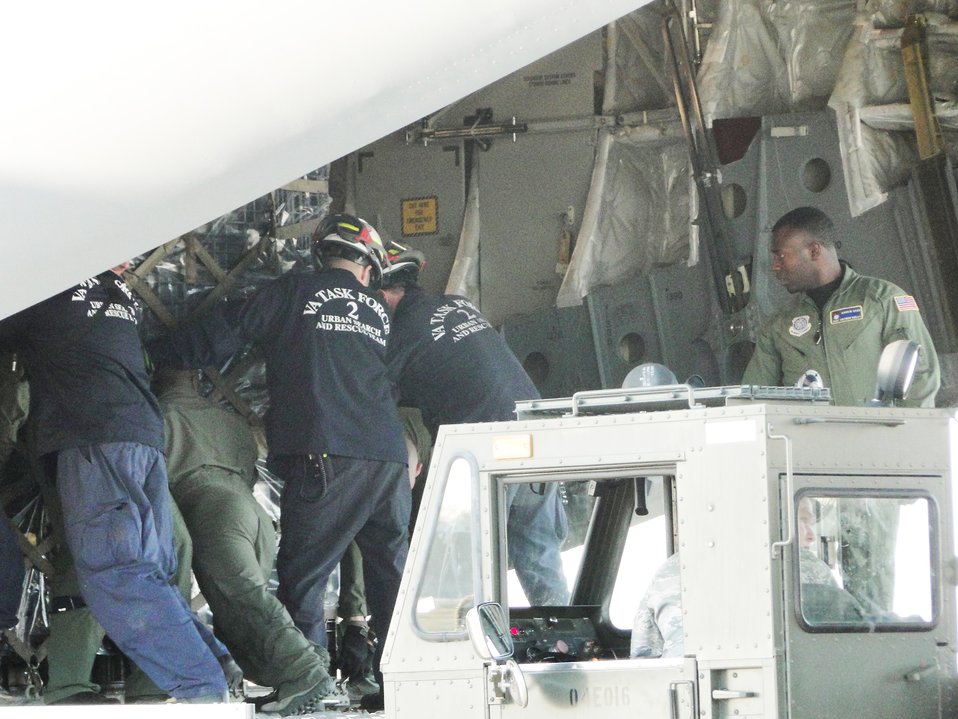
Local FEMA team heads to Haiti to aid humanitarian mission

Members of Virginia Task Force 2, Federal Emergency Management Agency, and aircrew load relief supplies onto a C-17 Globemaster III, Jan. 15, 2010, at Chambers Field, Naval Station Norfolk, Va. The Virginia Beach-based FEMA urban search and rescue team departed for earthquake-stricken Haiti to support ongoing relief operations. The aircrew is assigned to 16th Airlift Squadron.